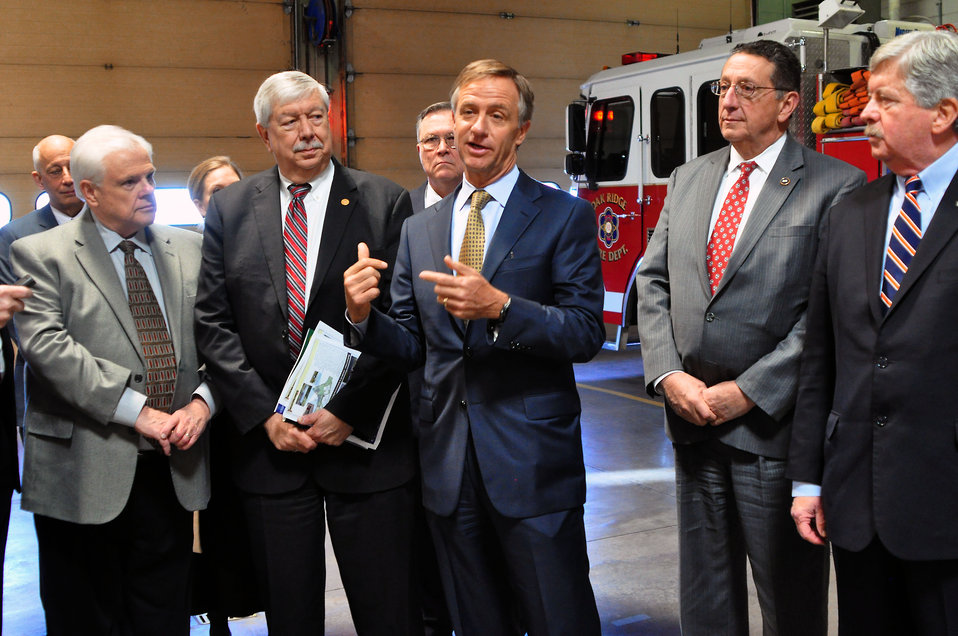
Gov. Bill Haslam Visit to ETTP 2014 Oak Ridge

14-037 DOE photo Lynn Freeny 3-21-2014 Oak Ridge Tennessee